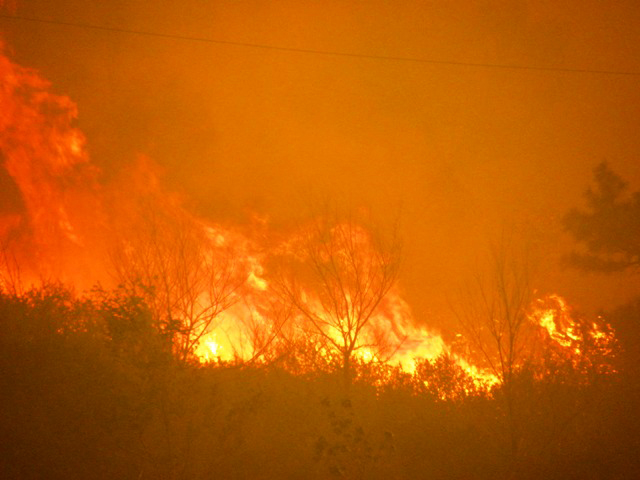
The High Park Wildfire burns on the Arapaho and Roosevelt National Forests and Pawnee National Grassland on Thursday, June 10, 2012. The High Park Wildfire located approximately 15 miles west of Fort Collins, CO has consumed over 65,738 acres of forest and grassland with approximately 189 homes destroyed. Over 1,773 personnel from the U.S. Forest Service (FS), state and local resources are fighting the wildfire and have achieved 55% containment as of June 20, 2012. The High Park Wildfire began on June 9. 2012 because of a lightening strike on private land.